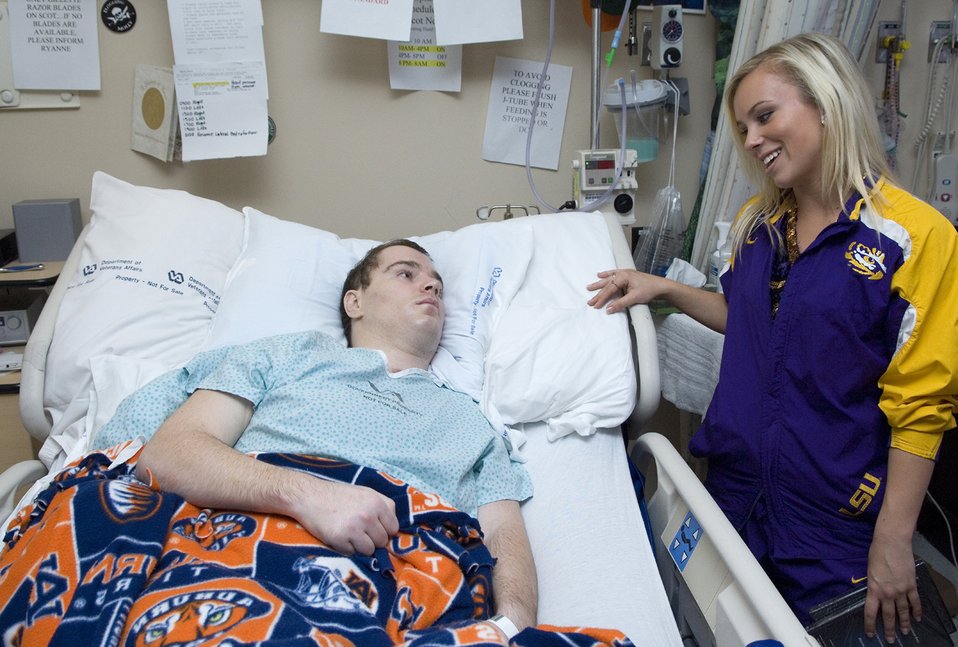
General leads morale tour at Tampa VA hospital

Christina Caporella, a member of the Louisiana State University Tigers girls dance team, talks with a wounded warrior during an April 5 visit to the James A. Haley Veterans' Hospital in Tampa, Fla. The Lady Tigers, along with cheer and dance squads from the other three 2008 Women's Final Four basketball teams, spent the afternoon sharing smiles and stories with retired and active duty members and their families.